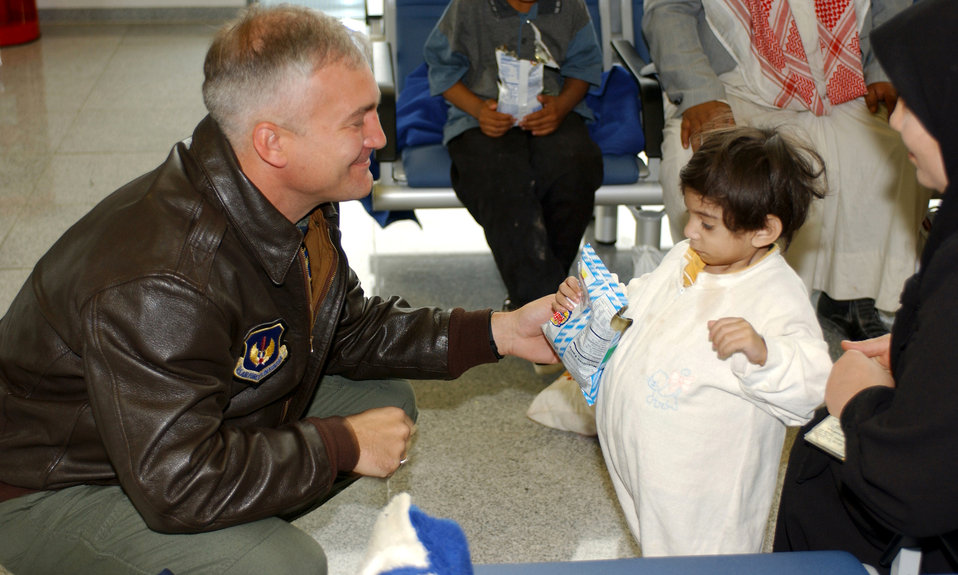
Young Iraqis arrive at Ramstein

RAMSTEIN AIR BASE, Germany -- Brig. Gen. Erwin F. Lessel III hands a snack to one of 18 Iraqi children who arrived here Oct. 6. The children were flown in by the Air Force from Baghdad International Airport to receive medical care from hospitals throughout Rheinland-Pfalz, Germany. Lessel is the 86th Airlift Wing commander here.